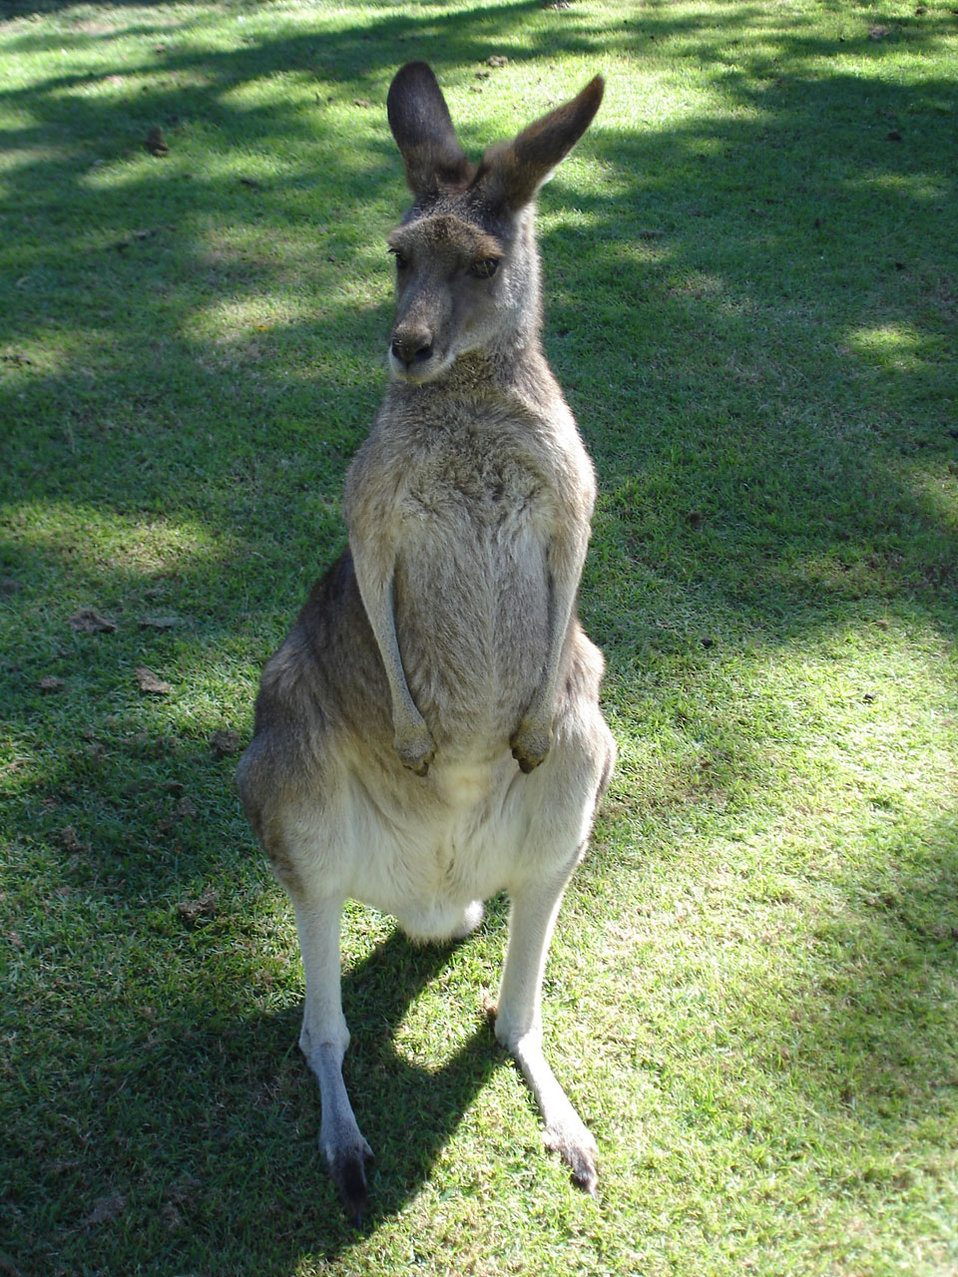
Kangaroo at lone pine sanctuary.